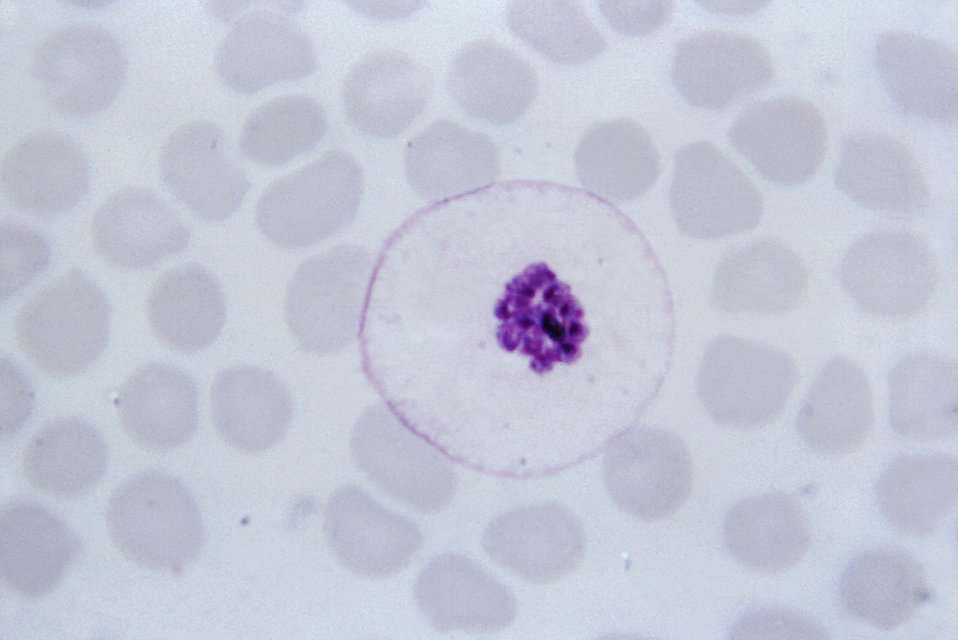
This thin film Giemsa stained micrograph depicts a mature Plasmodium malariae schizont.